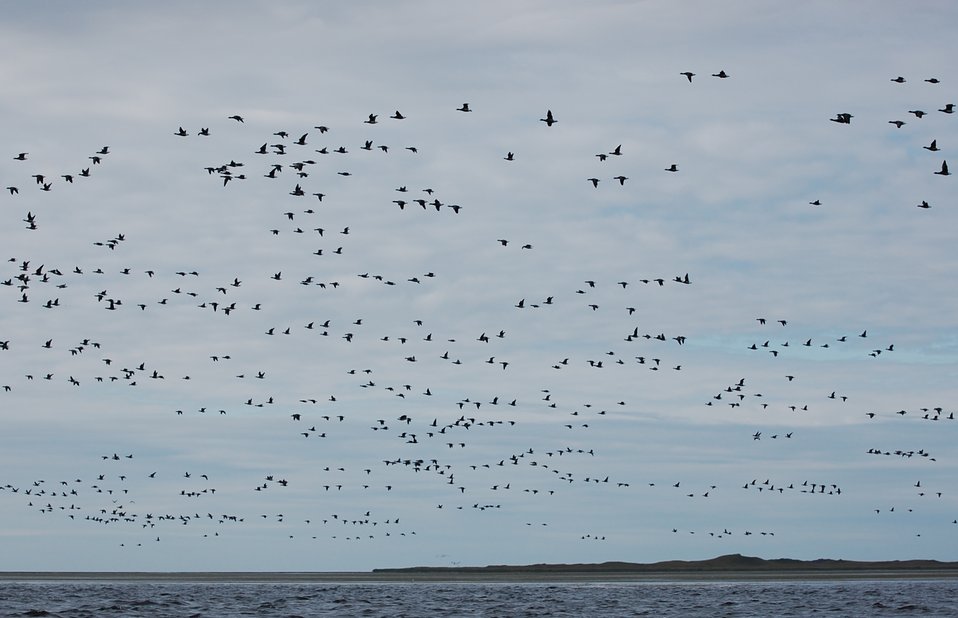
Brant at Izembek Lagoon

Izembek National Wildlife Refuge